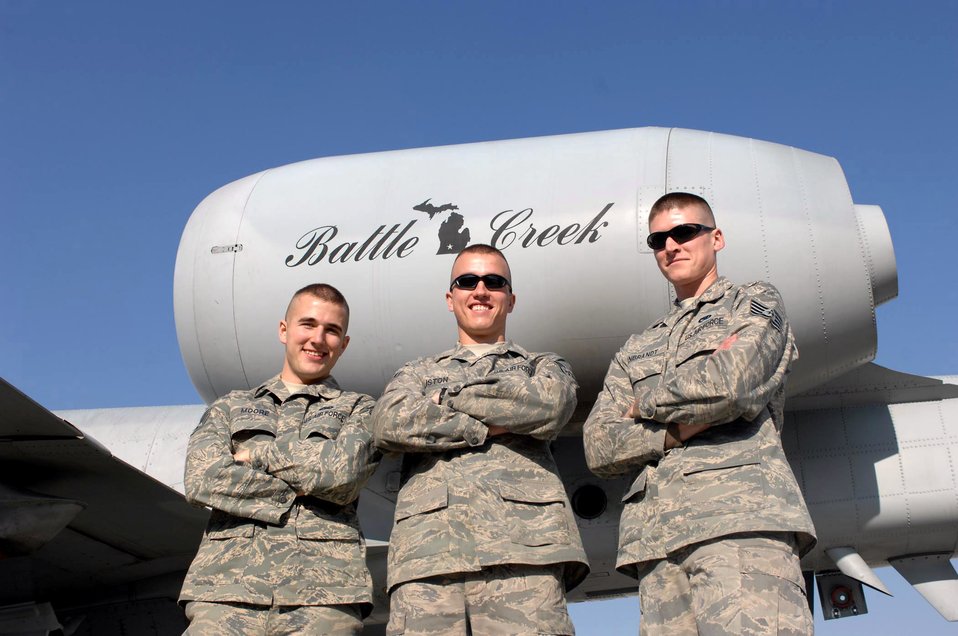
Trio of deployed Airmen get holiday surprise

(Left to right) Staff Sergeants Bryce Moore, James Liston and Kevin Rynbrandt stand in front of one of their unit's jets Jan. 1 at Bagram Air Base, Afghanistan. All three were recently notified that they had been selected for pilot training. The Airmen are deployed from the 110th Fighter Wing, at Battle Creek, Mich.